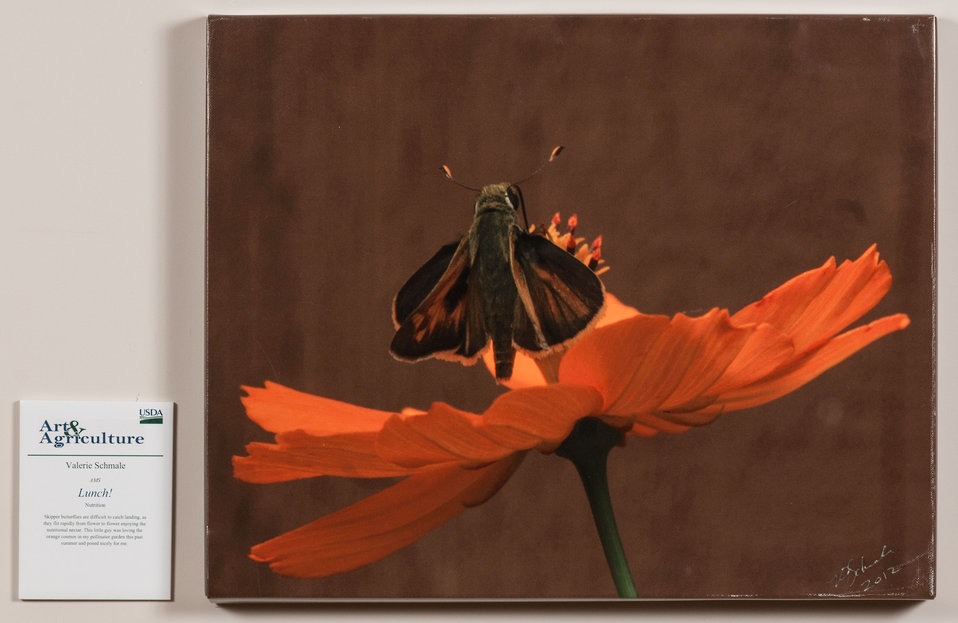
Online Viewer's Choice entries of the 2013 Art & Agriculture, Tuesday, July 9, 2013, in the South Building, Washington, D.C. Themes were expressed by employees from across the department and the contest was open to full-time and part-time USDA employees. Winning artwork will be displayed till the end of the year. U.S. Artistic expression is a creative outlet that is vital for an individual to grow and develop.